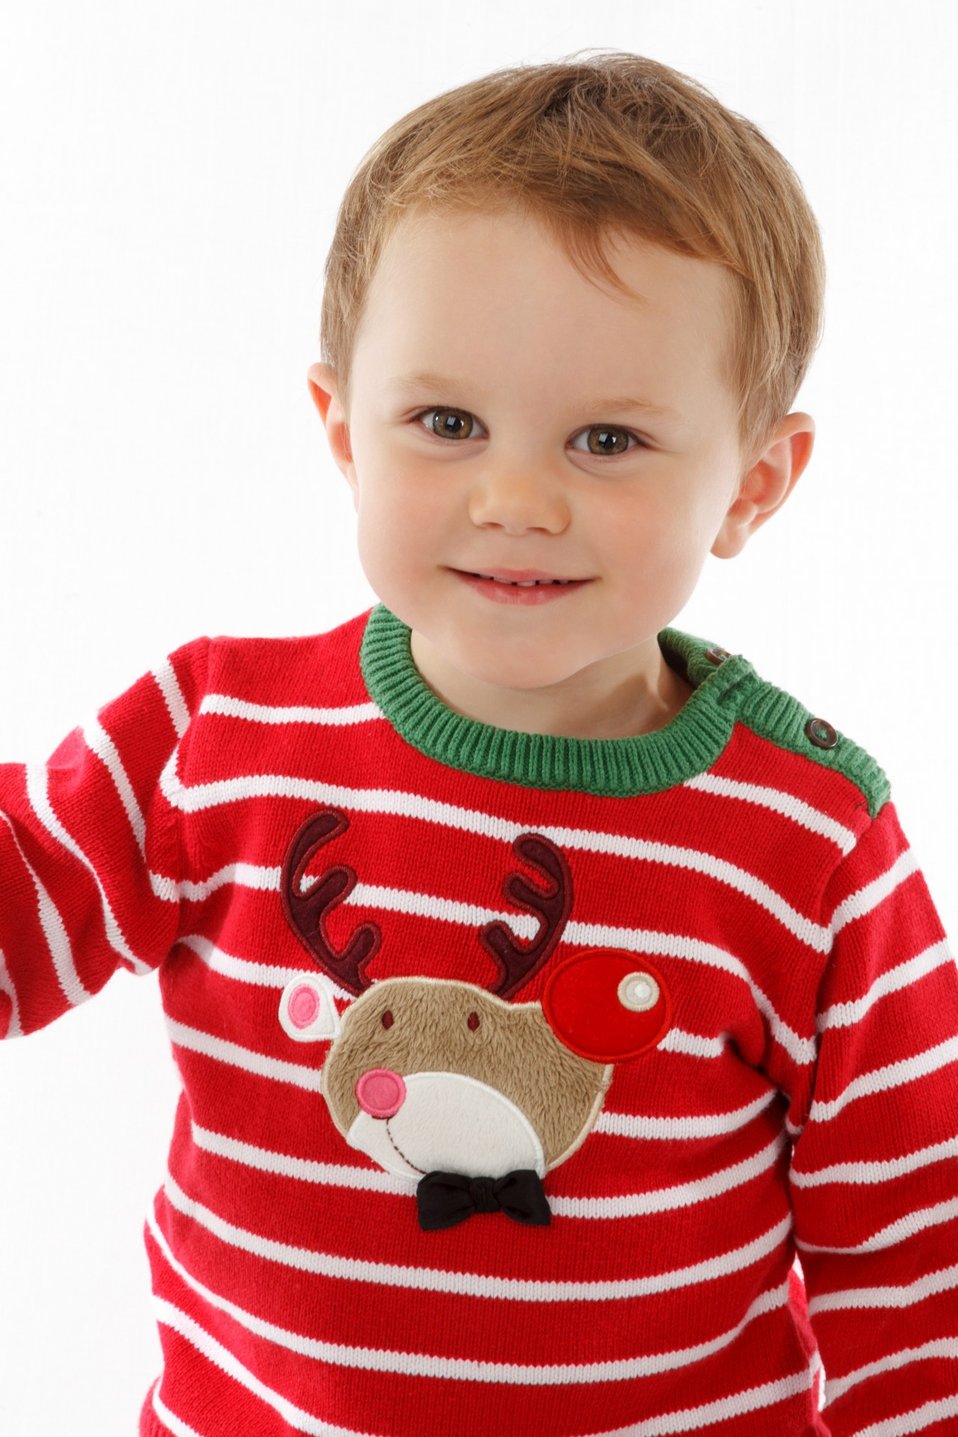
Little boy in christmas sweater

Little boy wearing a christmas jumper isolated on white background.